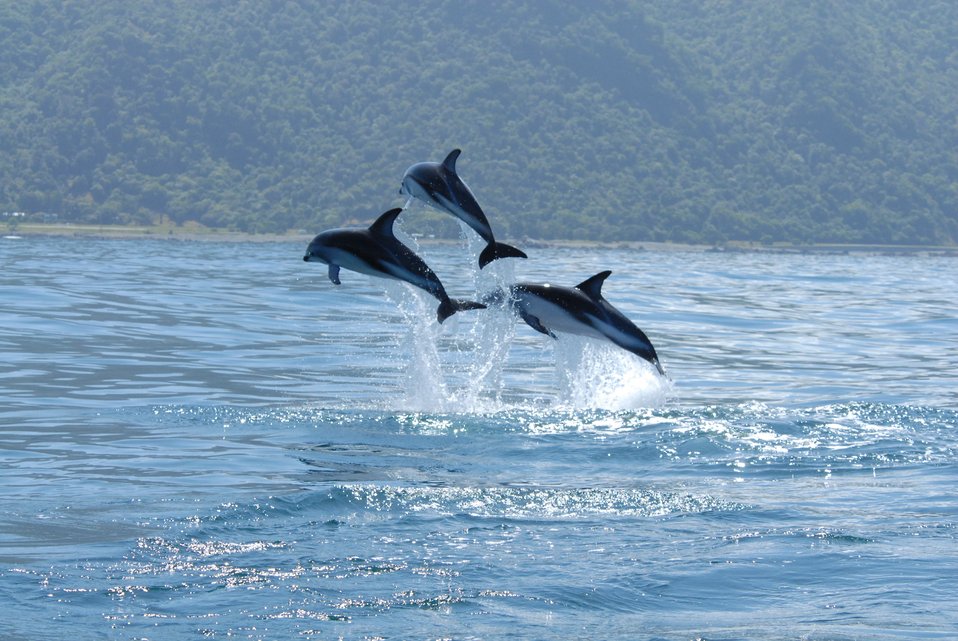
Dusky dolphin (Lagenorhynchus obscurus)